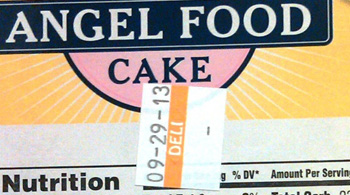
RECALLED – Angel Food Cakes

September 26, 2013 – Product Recall – Safeway Recalls Several Varieties of Angel Food Cake Due to Undeclared Soy and Milk Allergens.